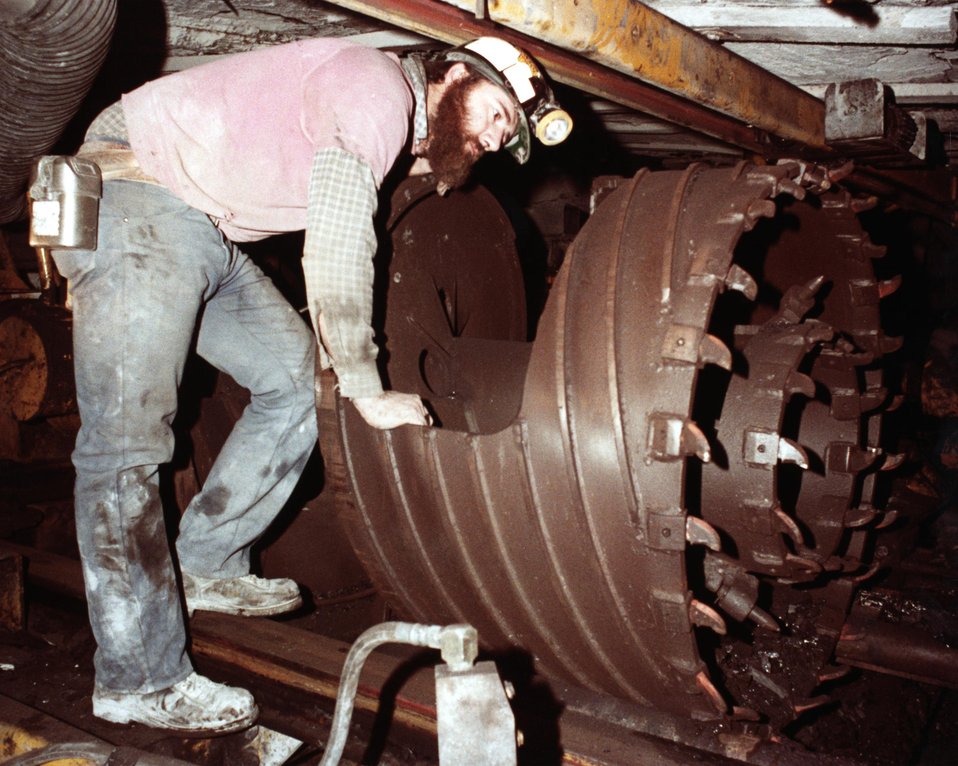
CLOSE-UP OF CUTTER HEAD.

THE BI-DIRECTIONAL AUGER IS BEING DESIGNED TO EXTRACT COAL FROM THE NORMAL SIZE PILLARS LEFT IN ROOM-AND-PILLAR MINING. BY DRILLING INTO TWO PILLARS FROM THE SAME LOCATION, A GREAT DEAL OF THE NONPRODUCTIVE TRAMMING IS ELIMINATED. BY DRILLING MUCH SHORTER BORE HOLES THAN THE PRESENT UNI- DIRECTIONAL AUGER, FEWER INTERSECTING HOLES WHICH WANDER INTO ROOF OR BOTTOM ROCK ARE EXPECTED. THE NET RESULT IS A THEORETICAL 40% MORE PRODUCTIVE MACHINE THAN THE UNI- DIRECTIONAL AUGER. ALSO, CREW SIZE IS REDUCED BY ONE. PARTLY BECAUSE THE MACHINE IS REMOTELY CONTROLLED AND PARTLY BECAUSE THE AUGER SEGMENTS ARE NOT REMOVED FROM THE MACHINE, THE OPERATION IS MUCH SAFER. DRILLING INTO STANDARD SIZE PILLARS OFFERS A TRUE INCREASE IN RECOVERY